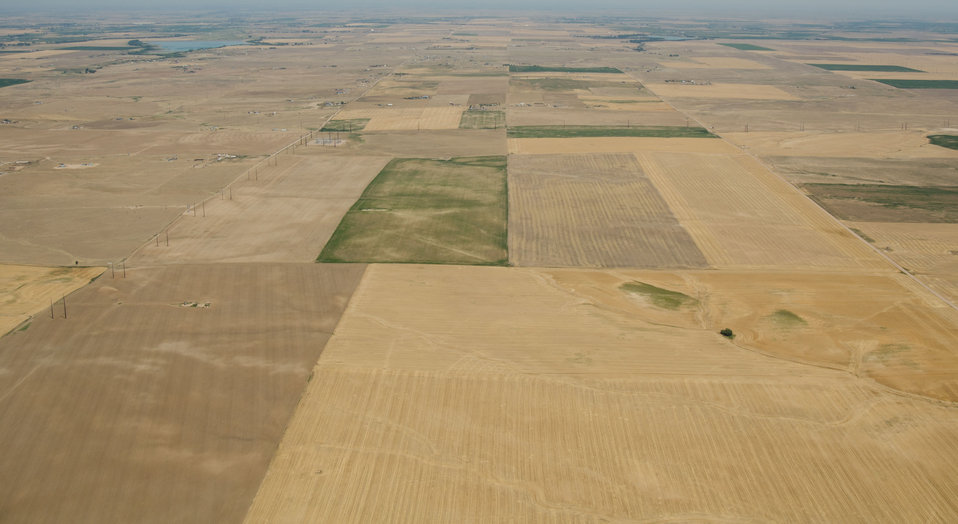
Aerial views of drought affected Colorado farm lands, 71 miles east of Denver, Colorado on Saturday, July 21, 2012.